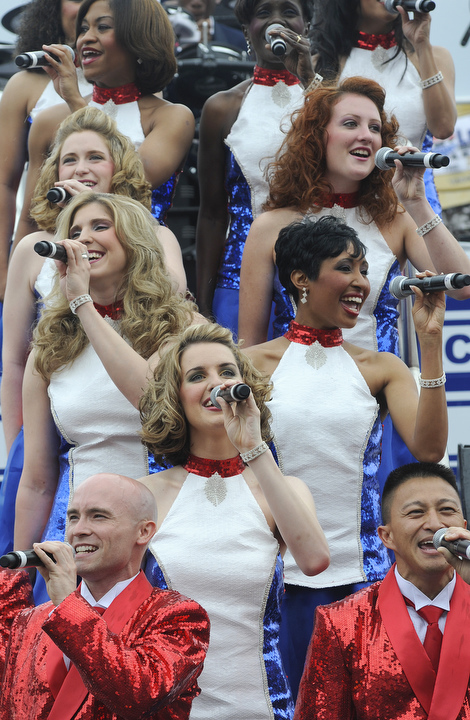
Coca-Cola 600

Tops in Blue the Air Force's premiere entertainment showcase preform before more than 100,00 NASCAR fans May 24 during a Salute to the Military during Memorial Day festivities at the Lowe's Motor Speedway Coca-Cola 600 Sprint Cup race, Charlotte, N.C.